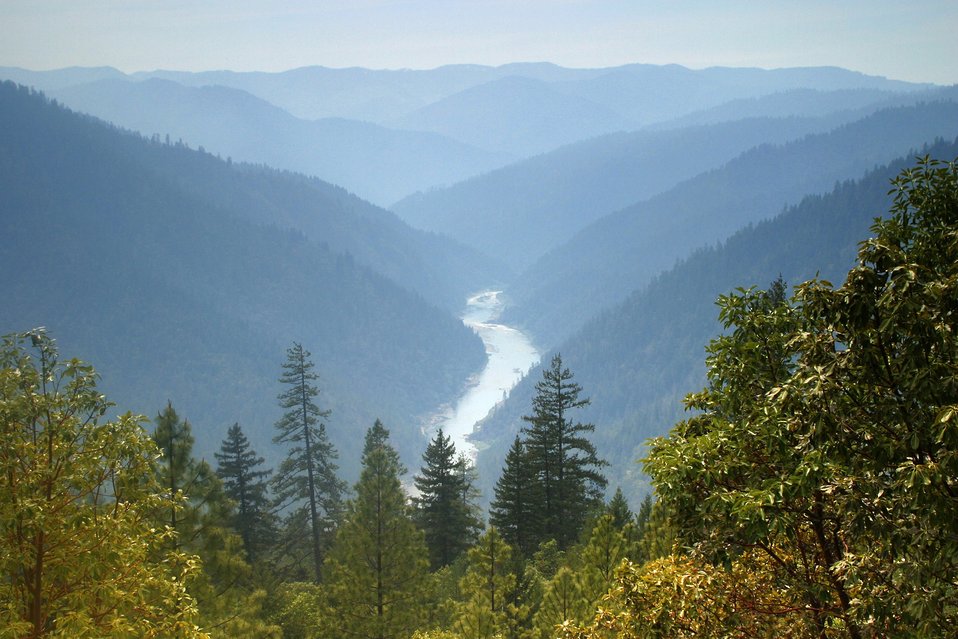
Wild section of the Rogue River from Grave Creek to Foster Bar May 19 to May 22.